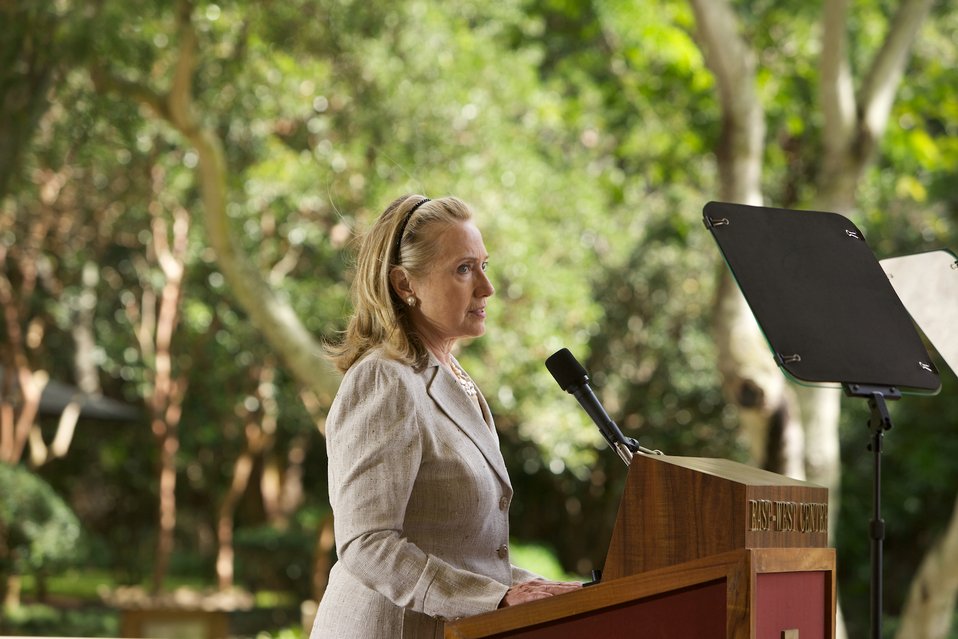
Secretary Clinton Delivers Remarks at the East West Center

U.S. Secretary of State Hillary Rodham Clinton delivers remarks at the East West Center on the campus of the University of Hawaii in Honolulu, Hawaii on November 10, 2011.